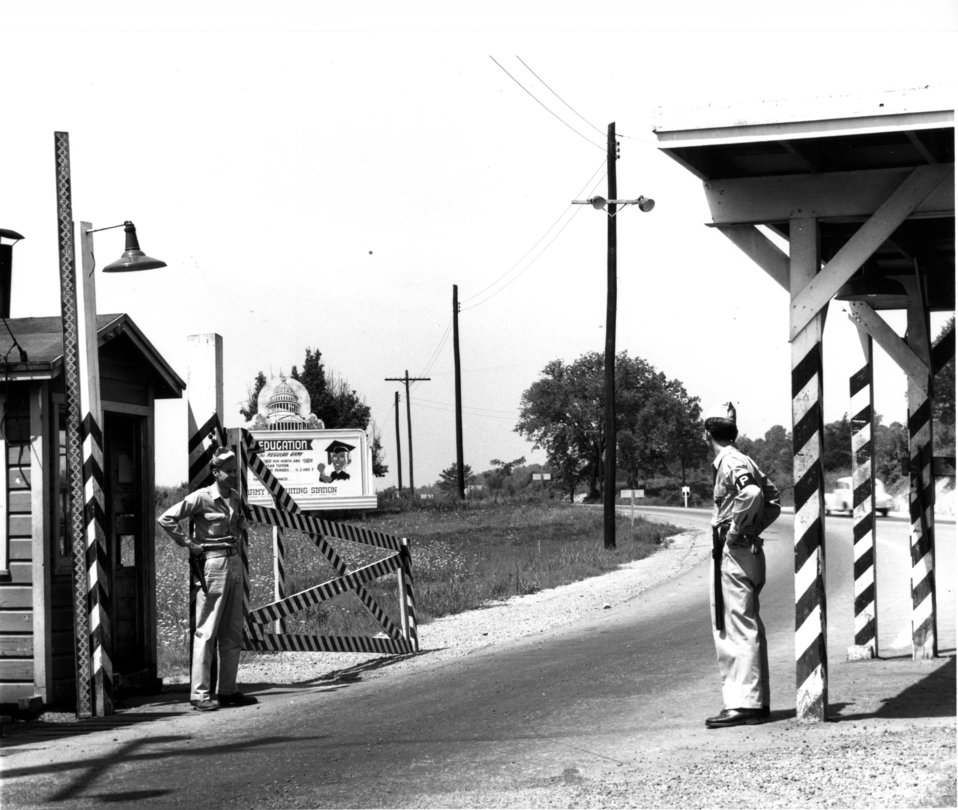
Security at Oak Ridge